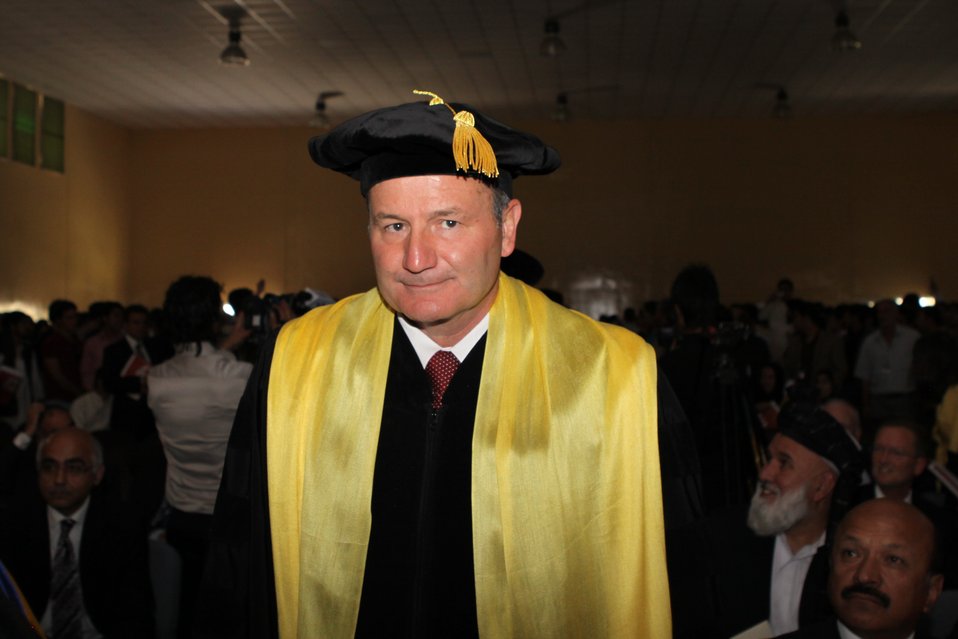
100526 AUAF Graduation 108